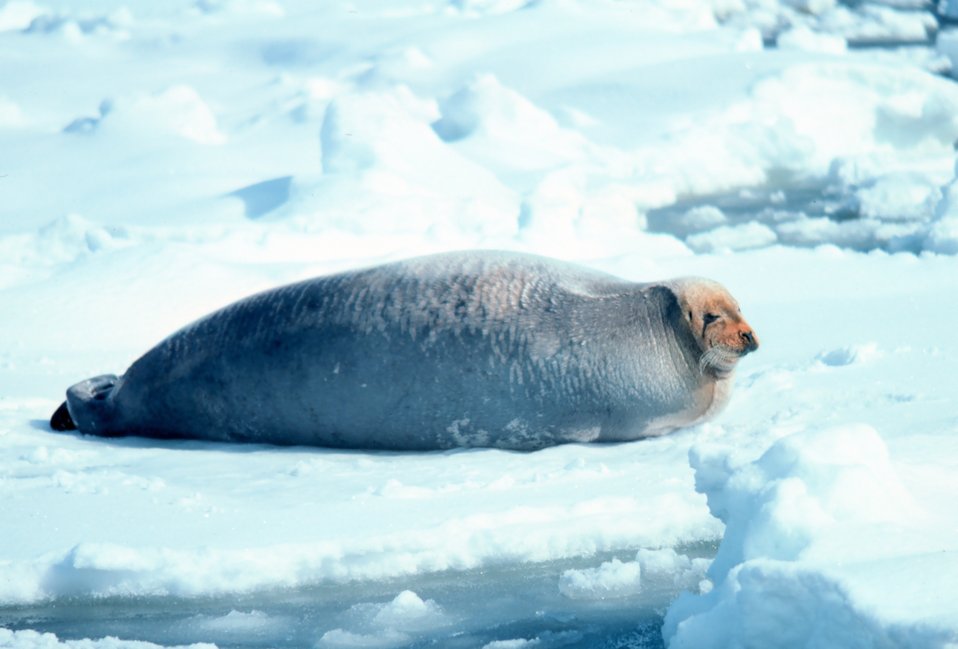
Bearded seal - Erignathus barbatus.